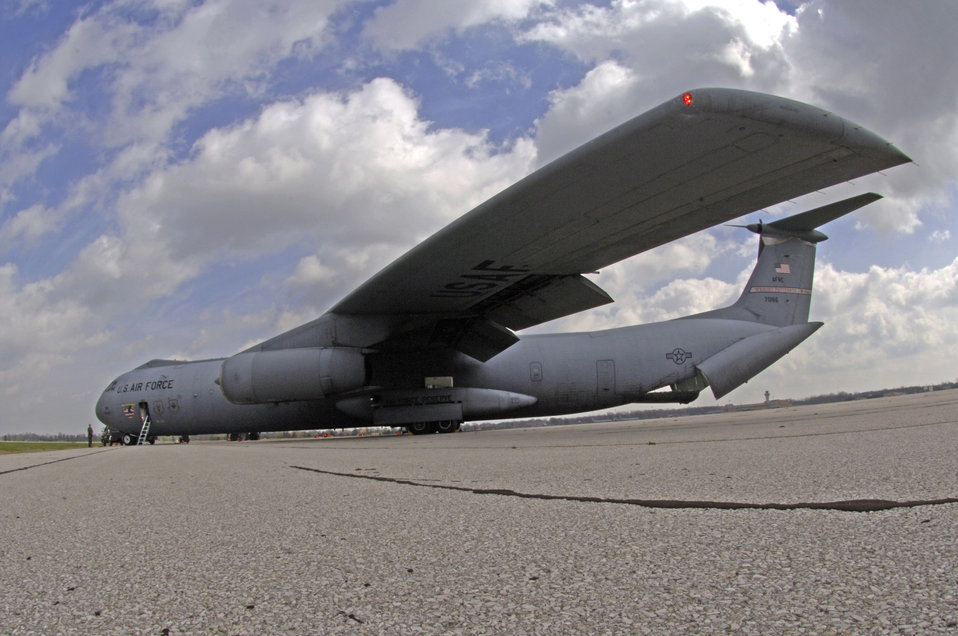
Final flight

A C-141C Starlifter from the 445th Airlift Wing parks on the ramp at Scott Air Force Base, Ill., on Friday, April 7, 2006. The aircraft, tail number 67-0166, made its final flight. It will take its place among other Air Mobility Command aircraft at the heritage airpark being built this year. The 445th, based at Wright-Patterson Air Force Base, Ohio, is converting from the Starlifter to the C-5 Galaxy.